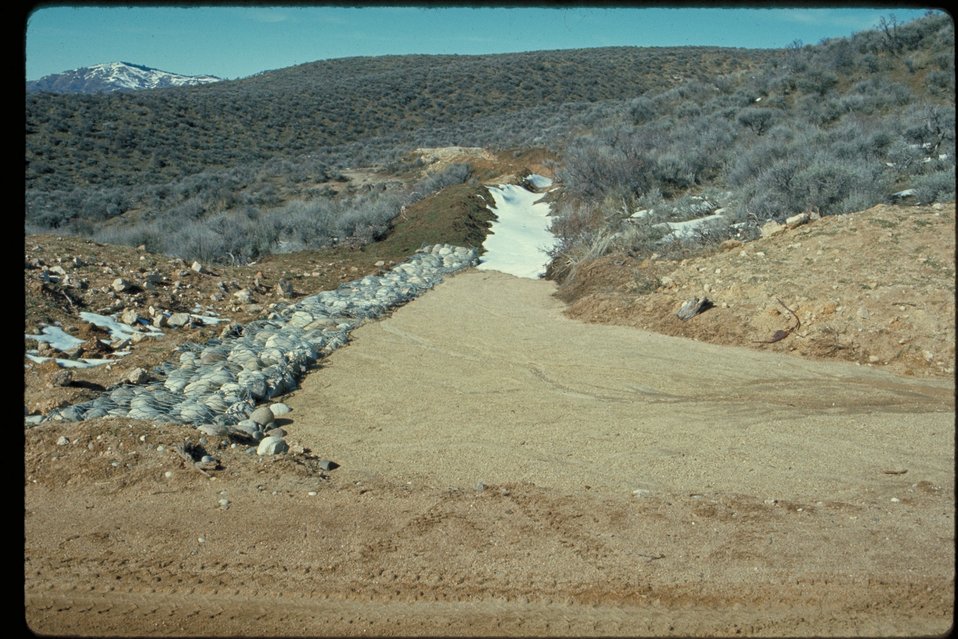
Gabions Four Rivers Field Office LSRD Lower Snake River District